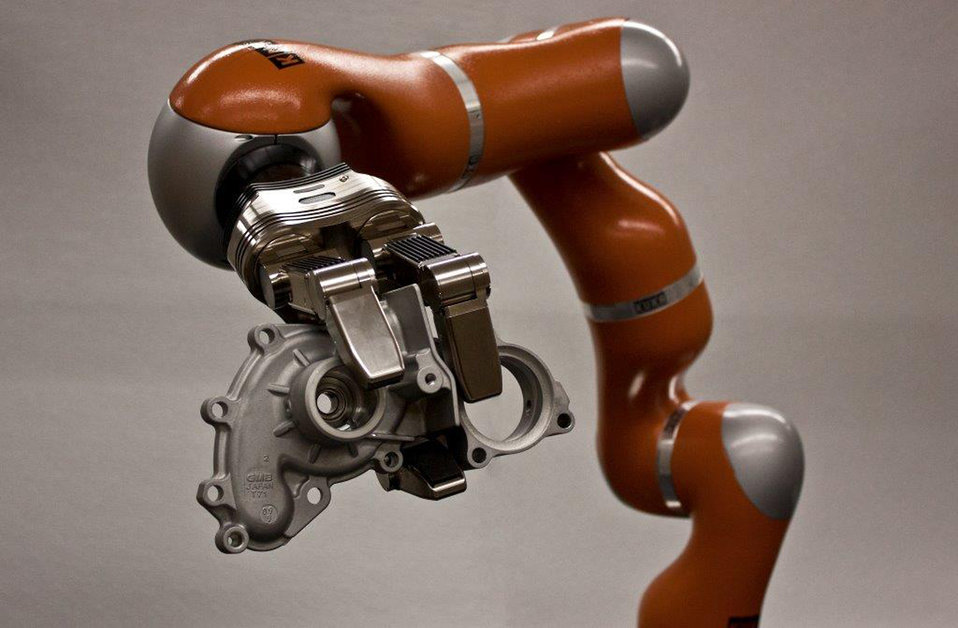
NIST Dexterous Manipulation Testbed

The NIST Dexterous Manipulation Testbed features a seven degree-of-freedom highly dexterous robot and a seven degree-of-freedom, three fingered robotic hand. The testbed is used to investigate new measurement science to gauge the operational characteristics of manipulation for manufacturing tasks.